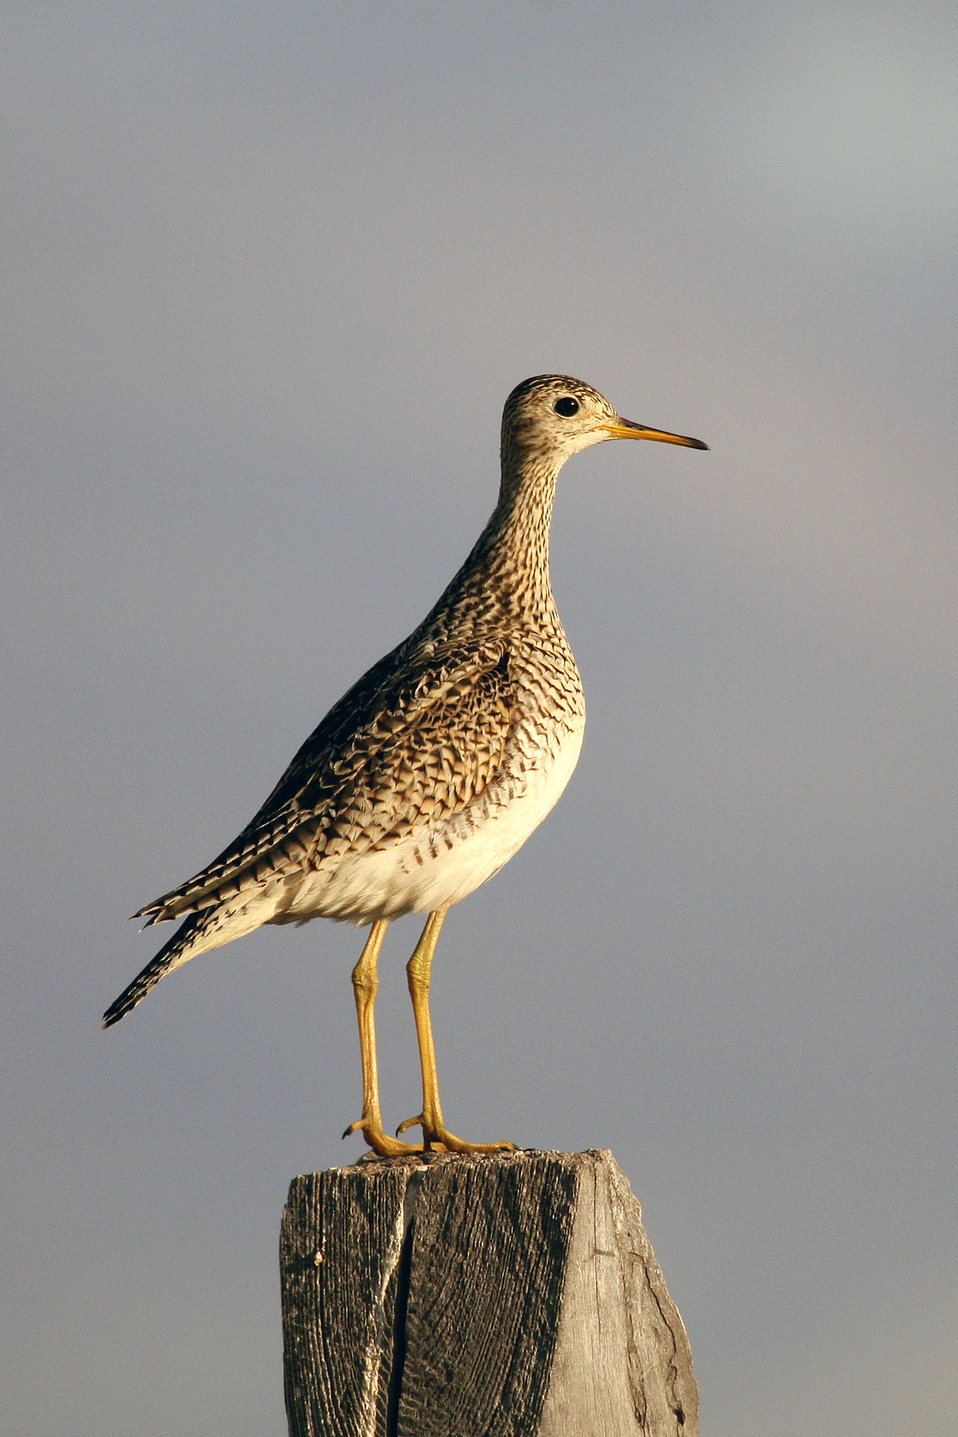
Upland Sandpiper

The upland sandpiper is a shorebird that prefers the prairie. You may see them perched on wooden fence posts or tree stumps.

Phot Credit: Gary Eslinger / USFWS